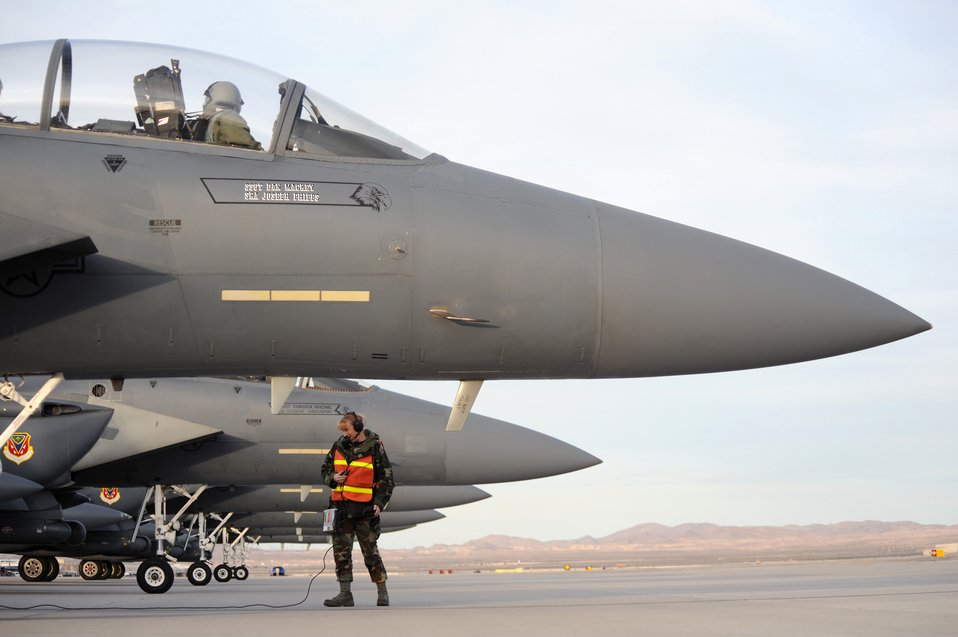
Red Flag

Staff Sgt.Tessa Burkett, a crew chief with the 366th Fighter Wing at Mountain Home Air Force Base, Idaho, talks to the pilot of a Mountain Home F-15E Strike Eagle that has landed at Nellis AFB, Nev., Feb. 20 for Red Flag 09-3. Red Flag is a multinational exercise providing a realistic environment to practice combat scenarios.